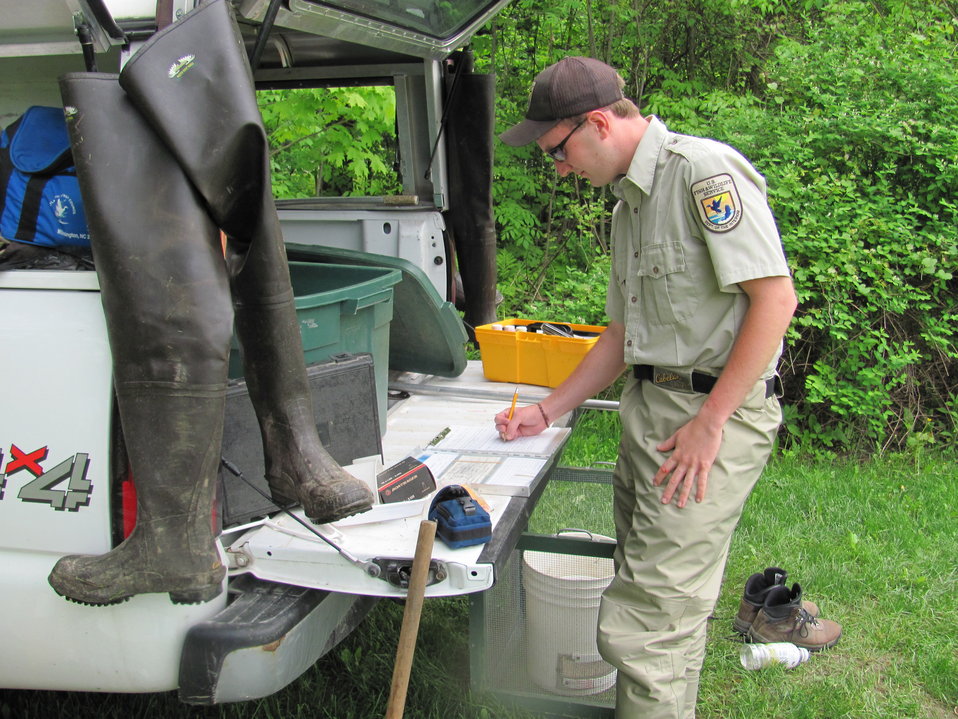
Field work at the Lake Champlain Fish and Wildlife Resources Office.